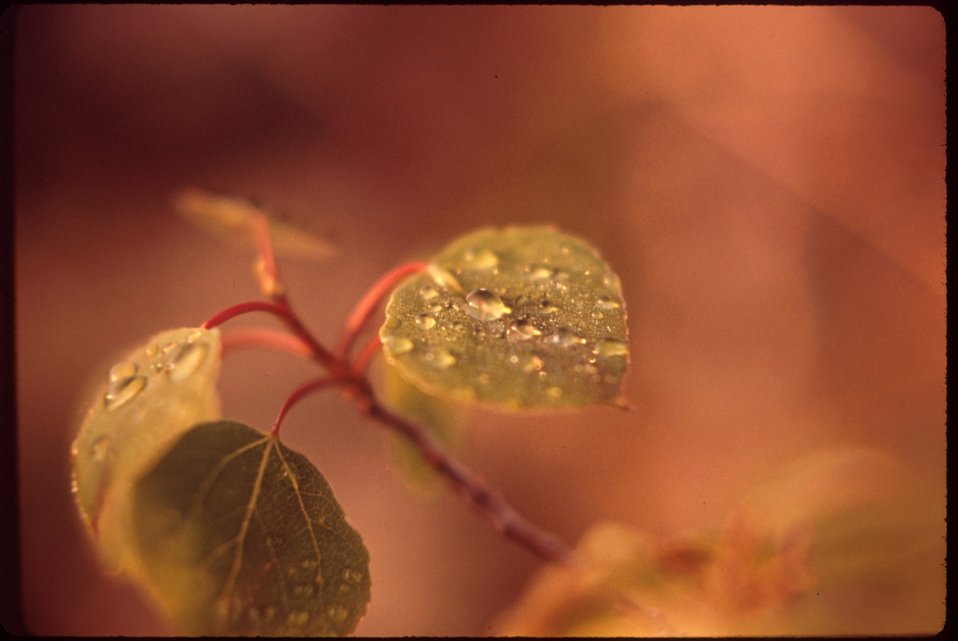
Populus tremuloides Aspen Tree